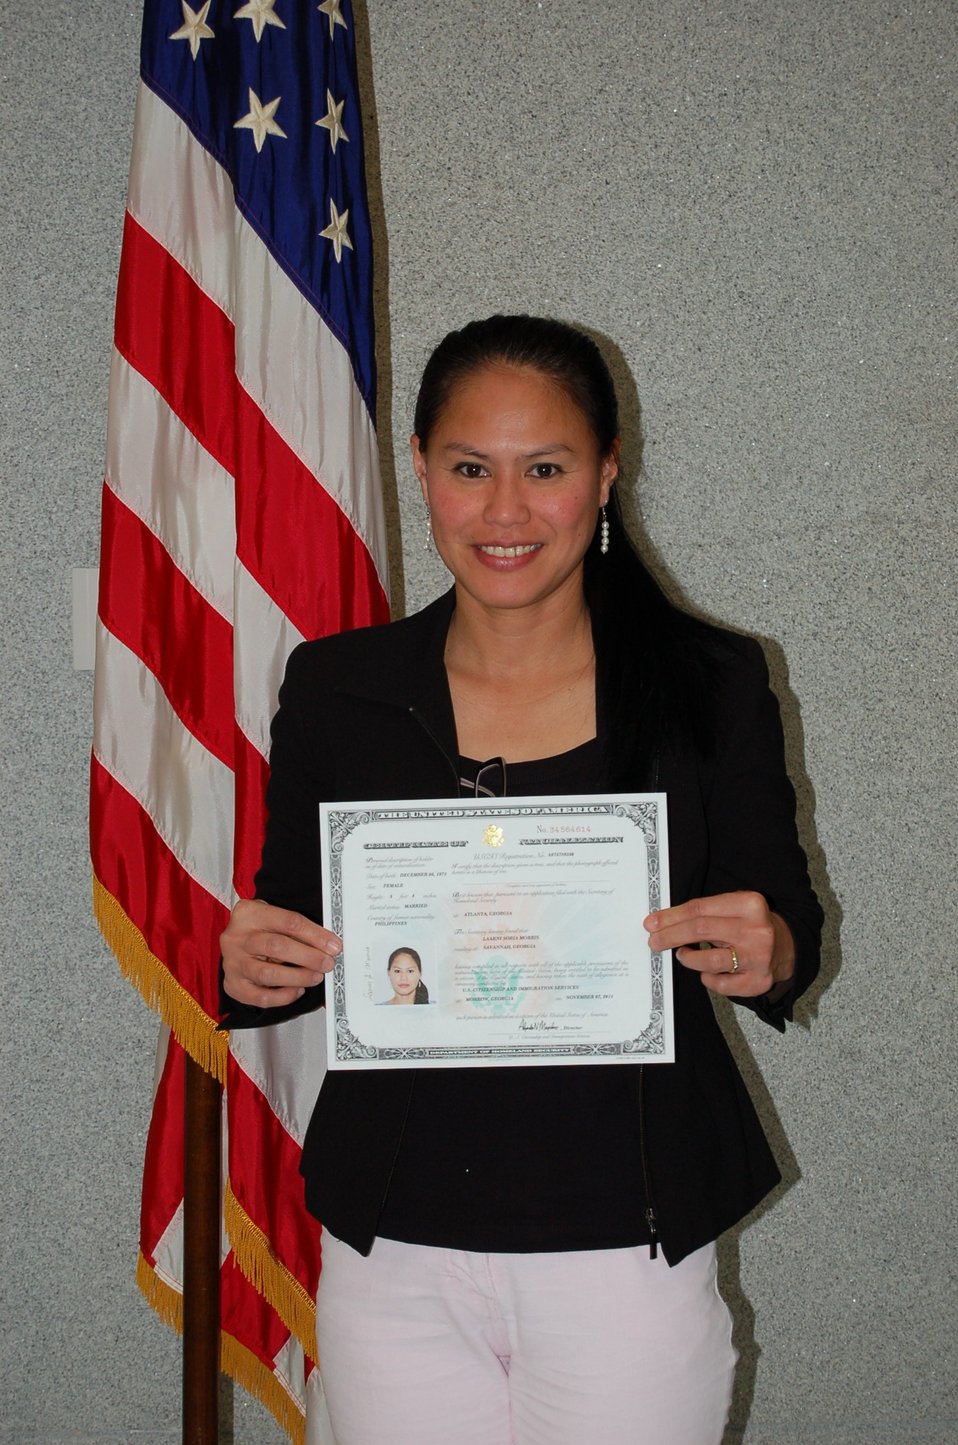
New Citizens